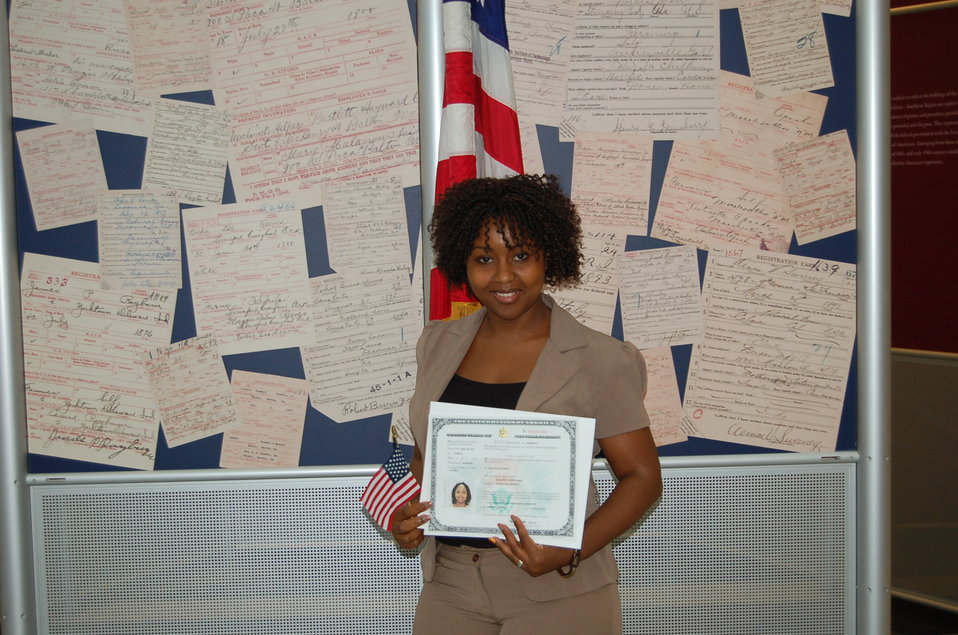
New Citizens